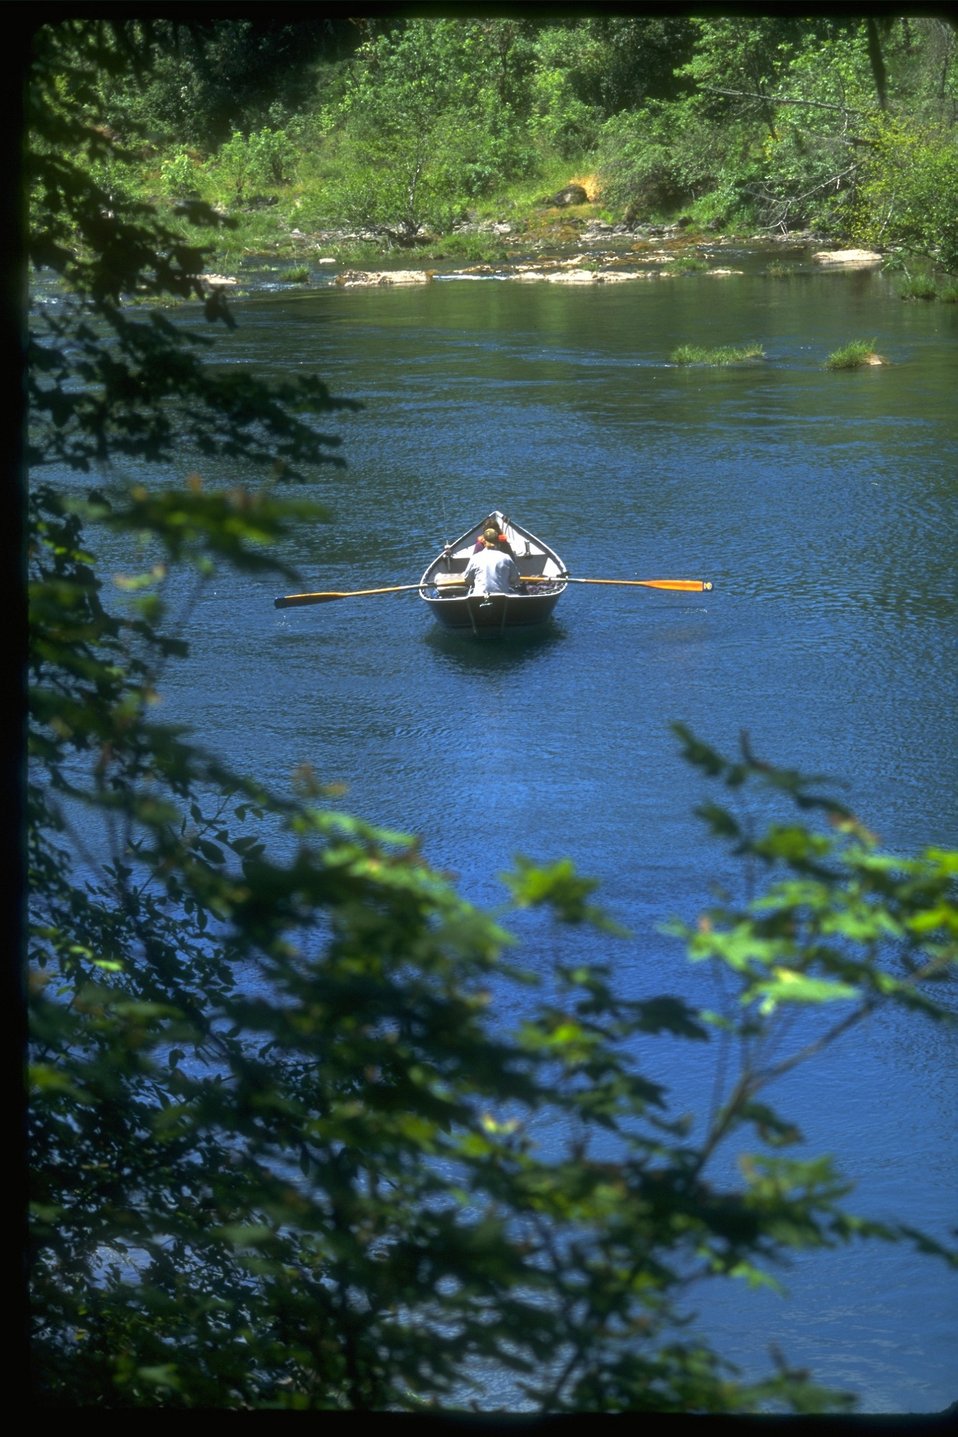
People fishing from drift boat on the North Umpqua River.